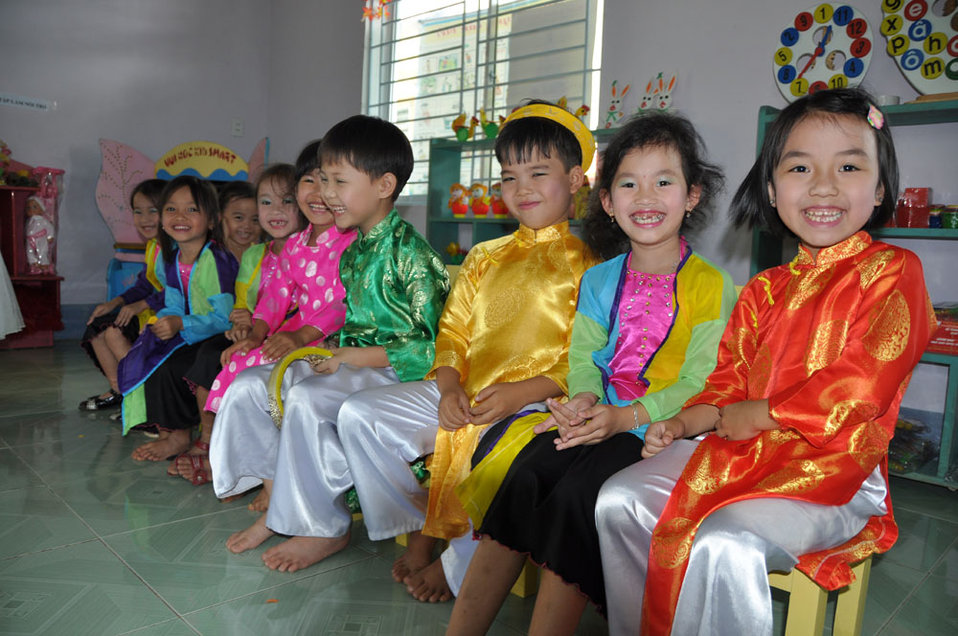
Children in Kon Tum, Vietnam, enjoy their new pre-schools refurbished with USAID funding